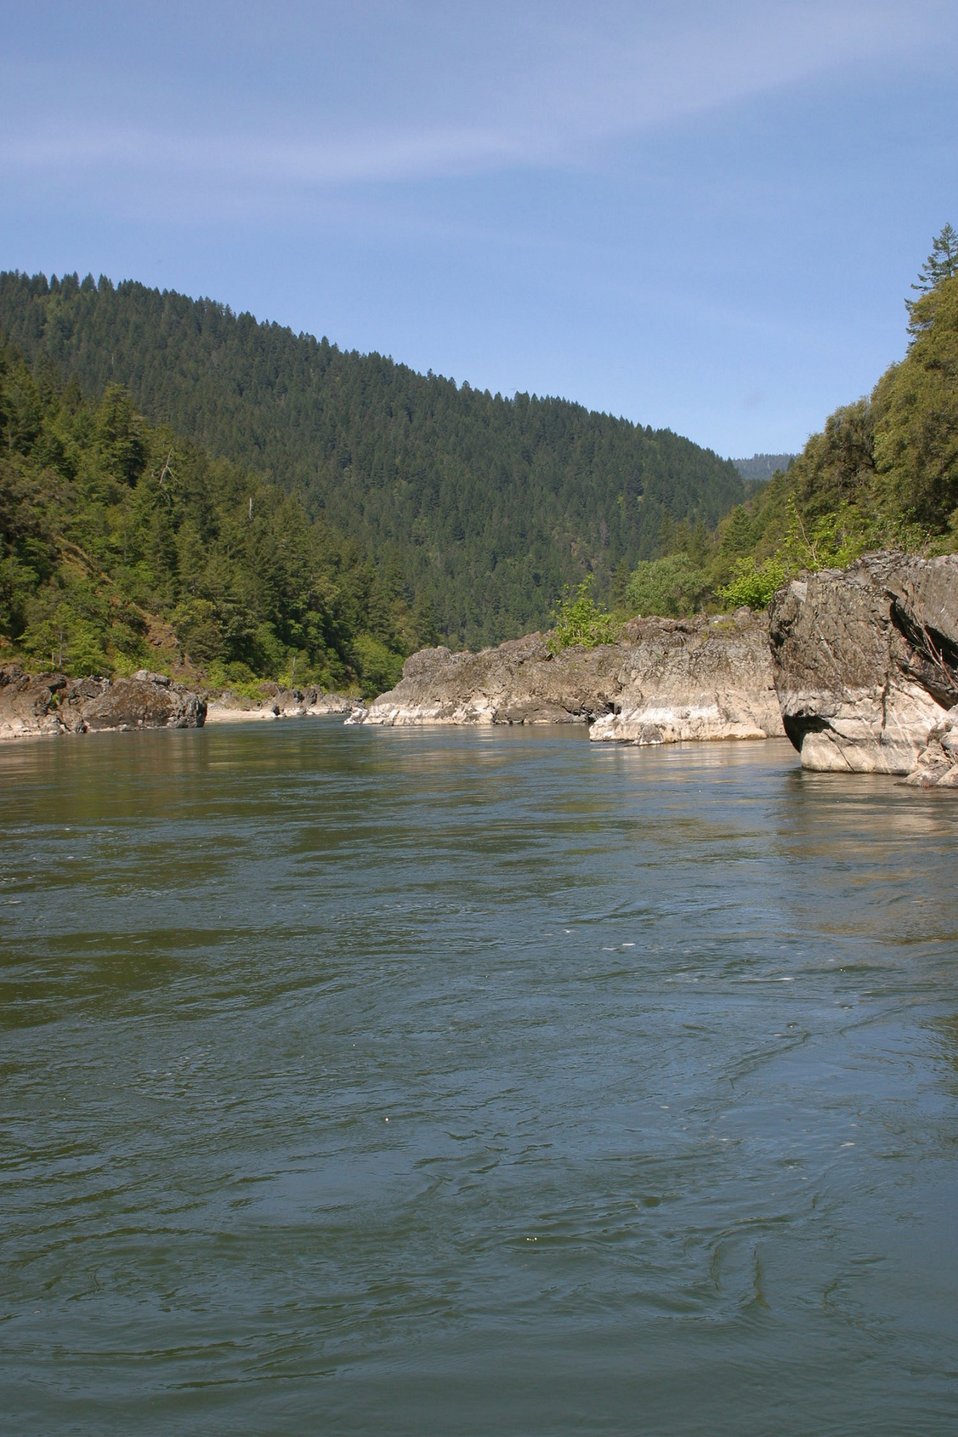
Wild section of the Rogue River from Grave Creek to Foster Bar May 19 to May 22.